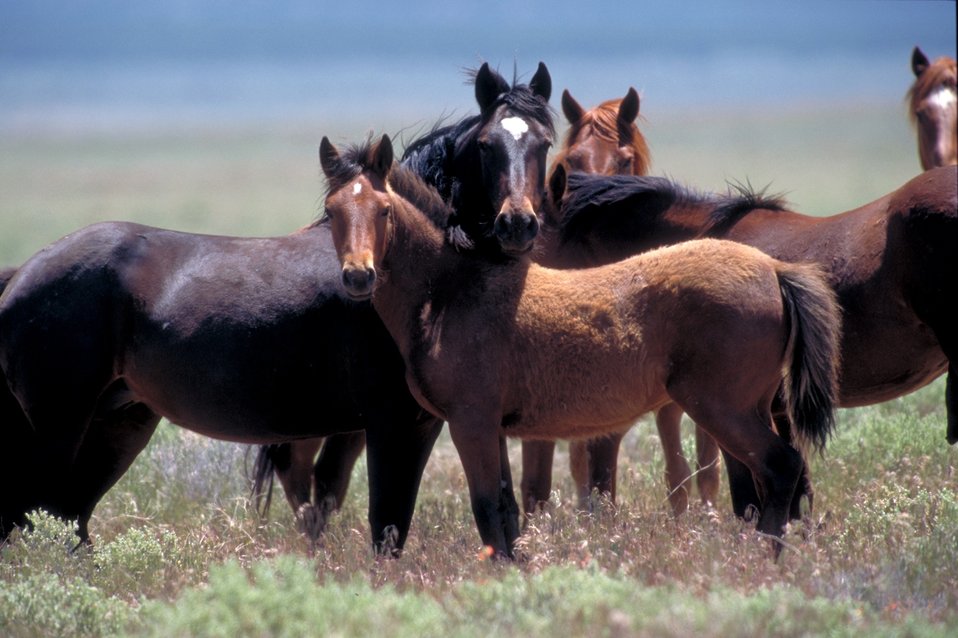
Onaqui Herd near Dugway, Utah.